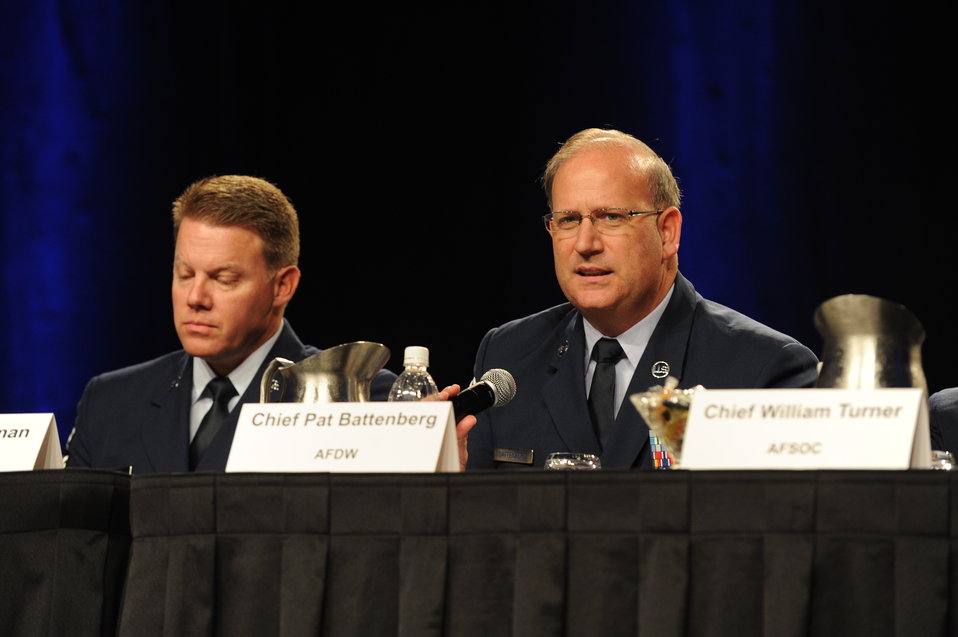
Command chiefs address concerns, offer advice during AFA convention forum

Chief Master Sgt. Eric R. Jaren, the command chief of Air Force Material Command, shares a question from the attendees as moderator of the Command Chief Master Sergeant Forum during the Air Force Association's 2011 Air & Space Conference & Technology Exposition in National Harbor, Md. The forum included (from left to right) Chief Master Sgt. Chris Muncy, the Air National Guard command chief, Chief Master Sgt. Todd Salzman, the Air Force Academy command chief, Chief Master Sgt. Pat Battenberg, the Air Force District of Washington command chief, Chief Master Sgt. William Turner, command chief for Air Force Special Operations Command and Chief Master Sgt. James Cody, command chief for Air Education and Training Command.